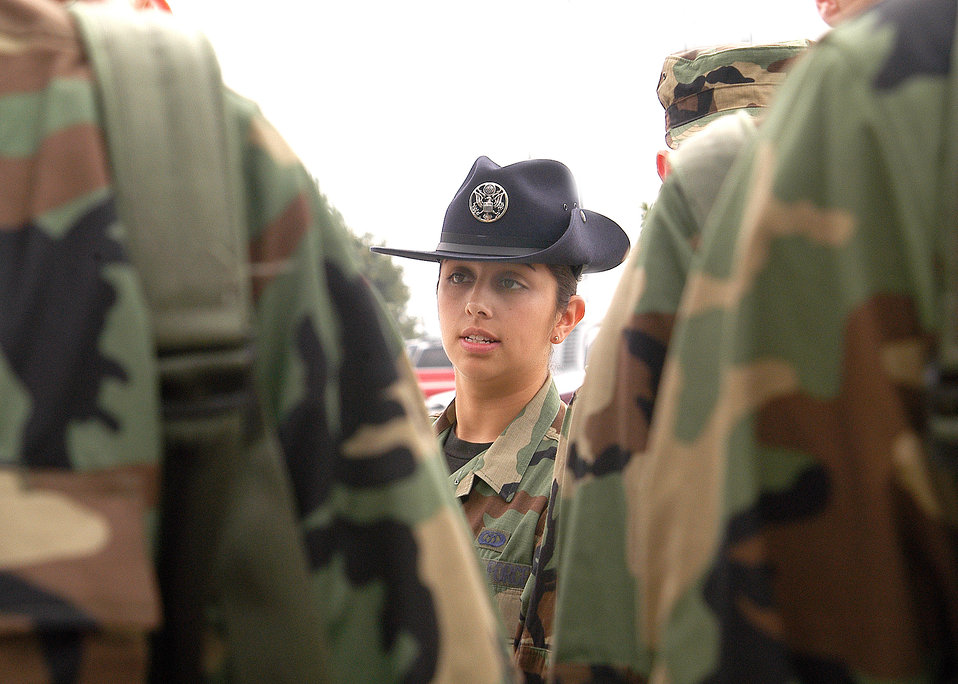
Dress and appearance

LACKLAND AIR FORCE BASE, Texas -- Staff Sgt. Angelique Hall inspects a flight of airmen as part of her military training instructor duties. Hall is an MTI for the 320th Training Squadron here.